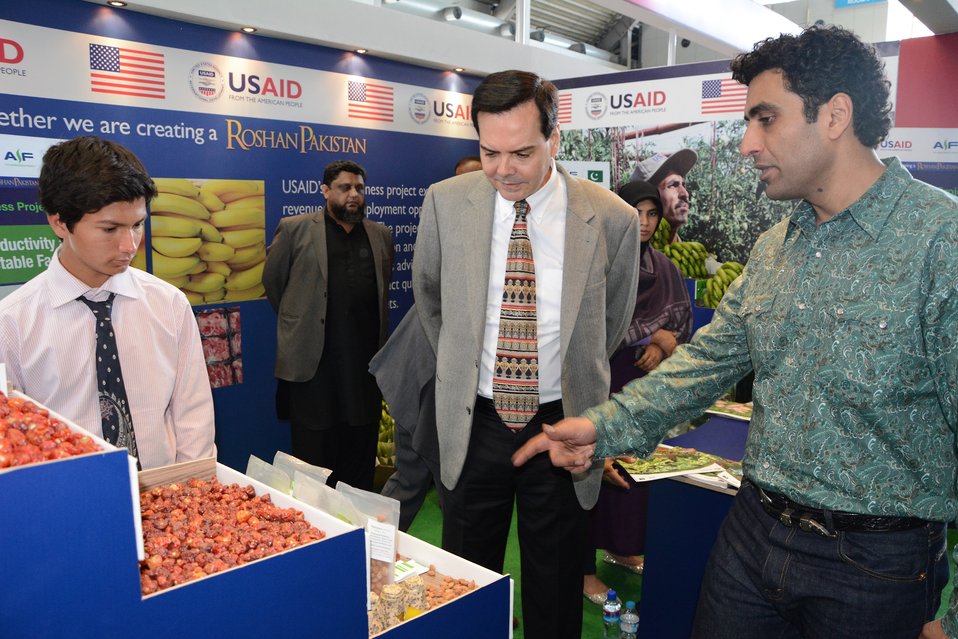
TAP8